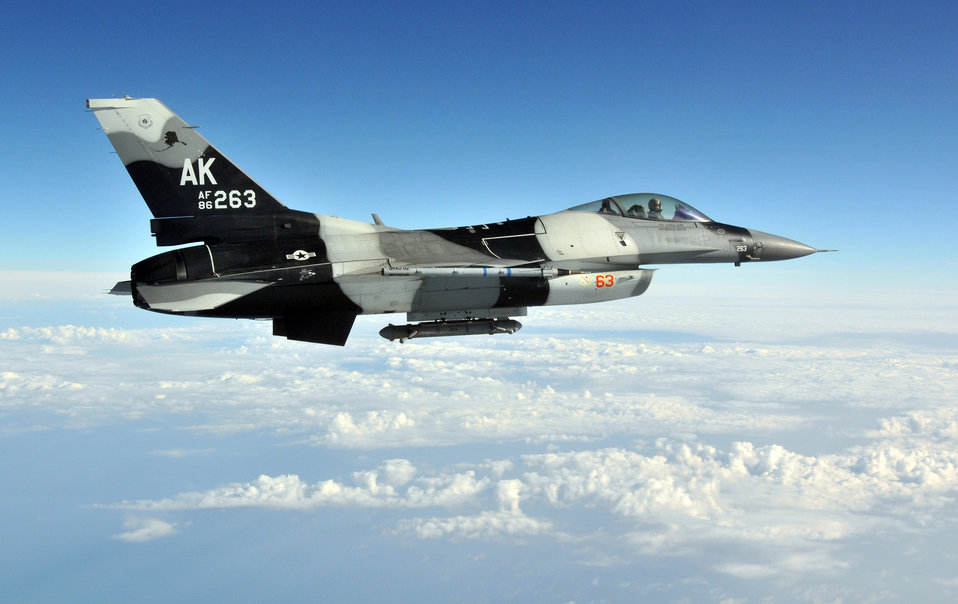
Joint Bilateral Training

An F-16 Fighting Falcon from the 18th Aggressor Squadron at Eielson Air Force Base, Alaska, flies near Kadena Air Base, Japan, during aerial training with Kadena's F-15C Eagles Feb. 26, 2010. The aggressors were participating in joint bilateral training with other U.S. forces and the Japan Air Self Defense Force from Feb. 22 to 26.